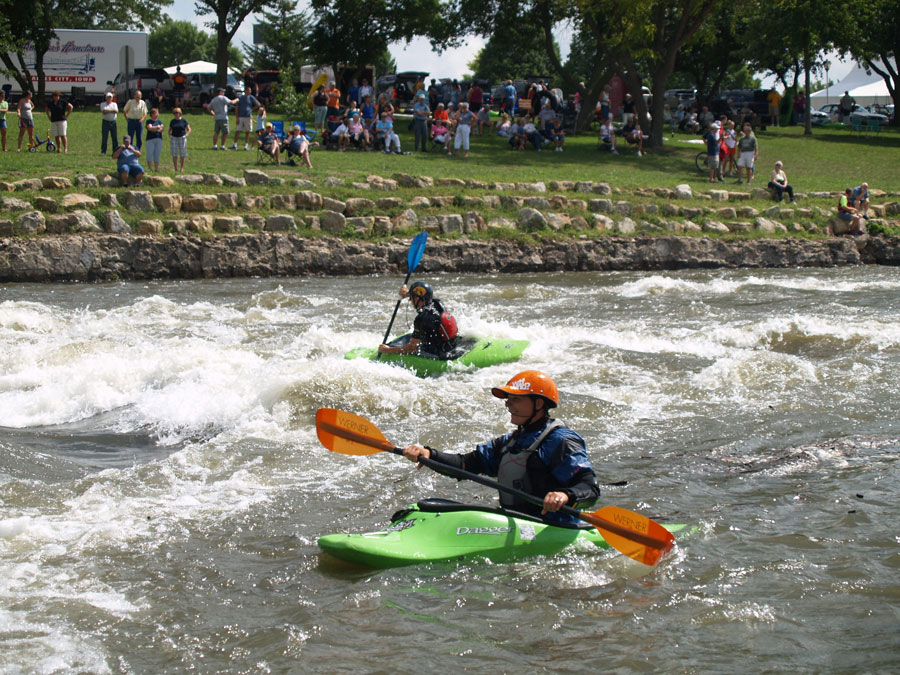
Charles-City kayakers-and-people-on-land-2

The Charles City Whitewater Course in Iowa attracts kayakers and tourists, helping people reconnect with the river and adding to the local economy. The course is part of the Charles City Riverfront Park, winner of EPA’s 2013 National Award for Smart Growth Achievement in the category of Plazas, Parks, and Public Places. The award is given annually for creative, sustainable initiatives that better protect the health and the environment of our communities while strengthening local economies. In 2013, EPA recognized innovative projects in seven communities.